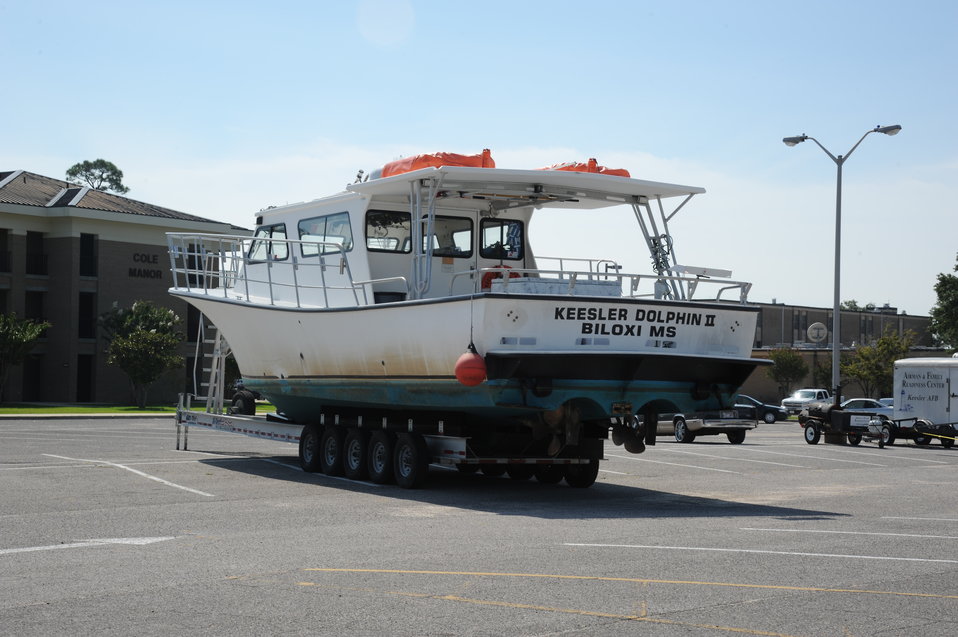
Keesler takes preventative measures to prepare for Isaac

8/28/2012 - The Keesler Dolphin II is moved to safe ground in a parking lot Aug. 27, 2012. Keesler personnel are taking preventative measures to prepare and protect themselves and Keesler's assets as the base commander has declared HURCON 3, meaning destructive winds of 58 mph or greater are expected as Isaac approaches.